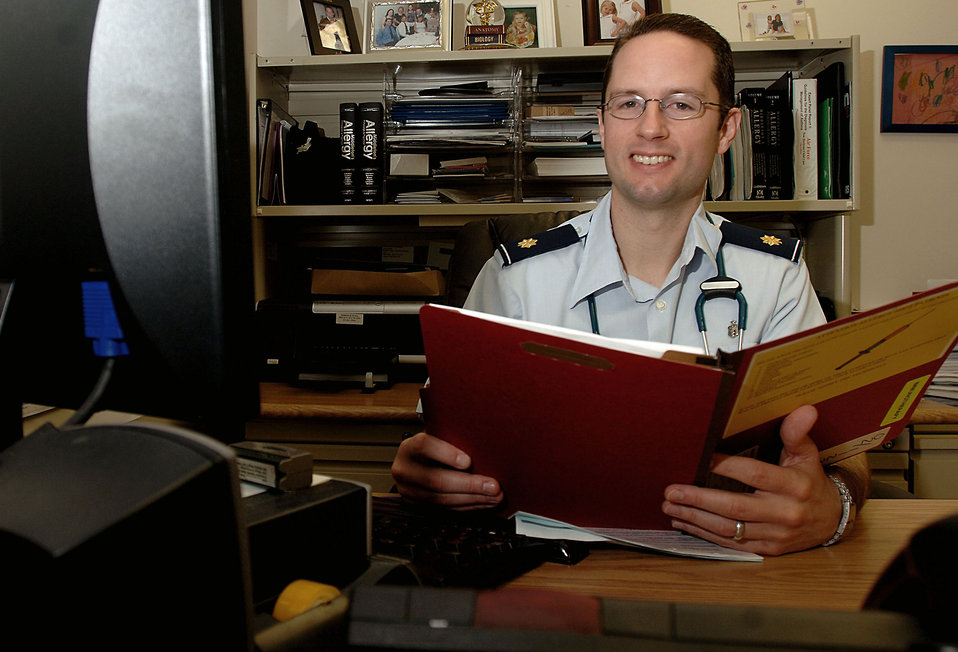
Allergist wins national award

Maj. (Dr.) Christopher Calabria reviews a patient's immunology records Jan. 26. Dr. Calabria was selected for an American Academy of Allergy, Asthma and Immunology Award that recognizes outstanding research published by a developing researcher. Dr. Calabria is the officer in charge of the Wilford Hall Medical Center Immunizations Clinic.